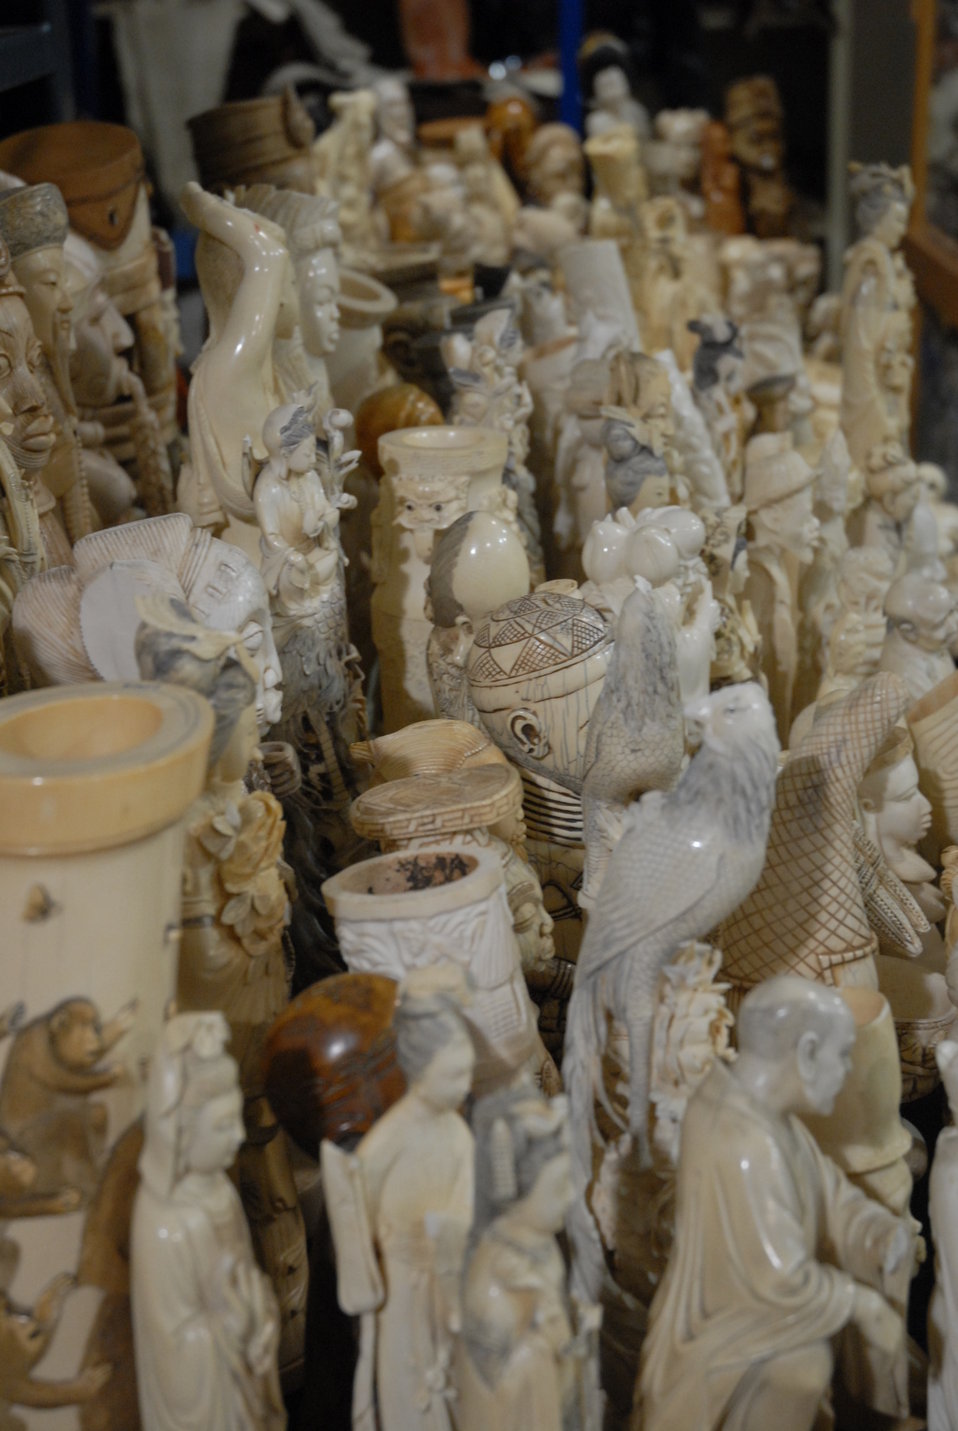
Intricate carvings of contraband ivory slated for destruction in the crush.